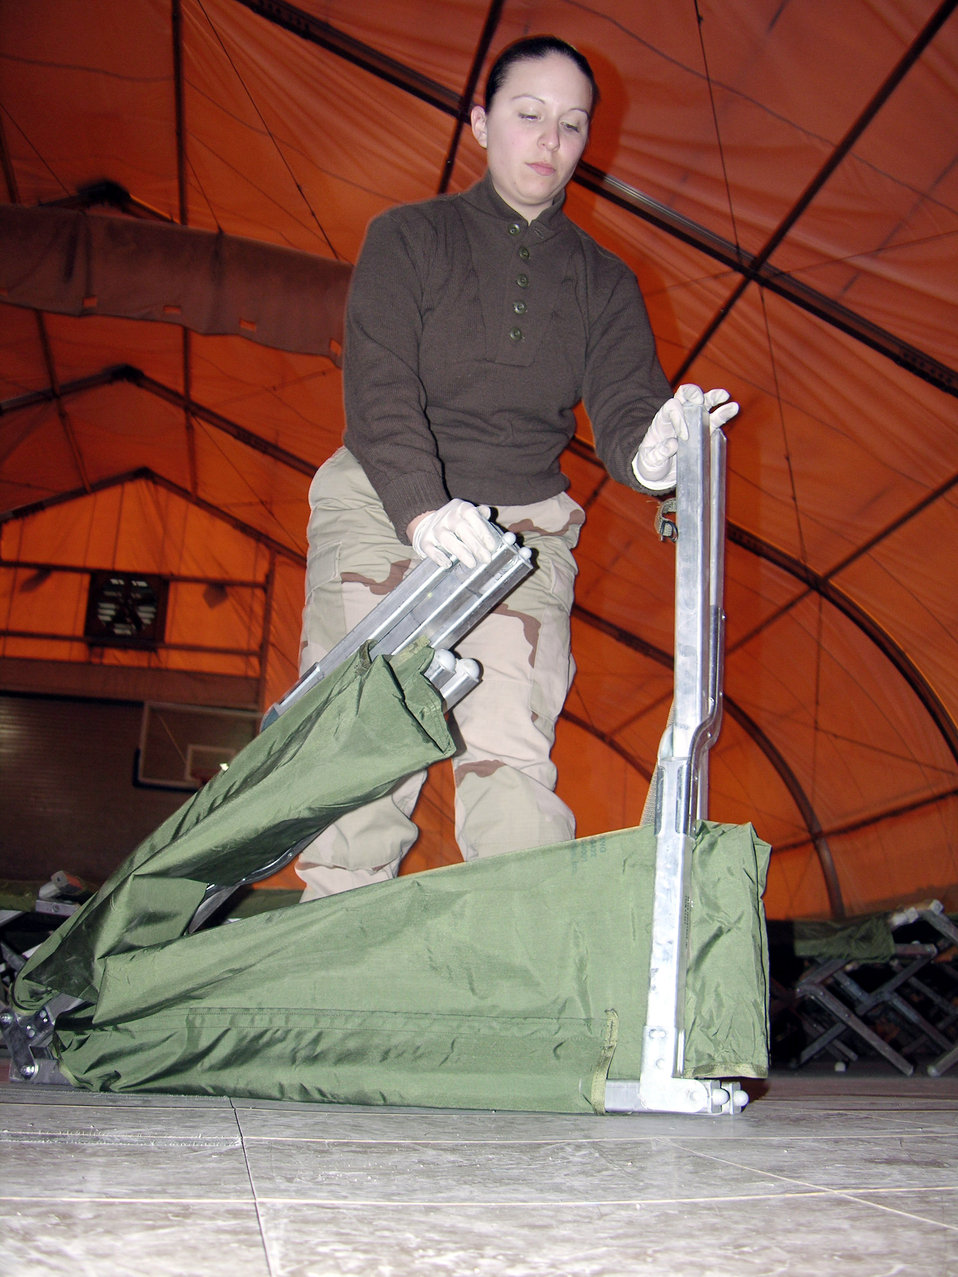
Manas Airmen handle transient surge

MANAS AIR BASE, Kyrgyzstan -- Senior Airman Melissa Cruz breaks down a cot after more than 150 transient Soldiers bunked in the gym for two nights. Airman Cruz is assigned to the 376th Expeditionary Services Squadron here.